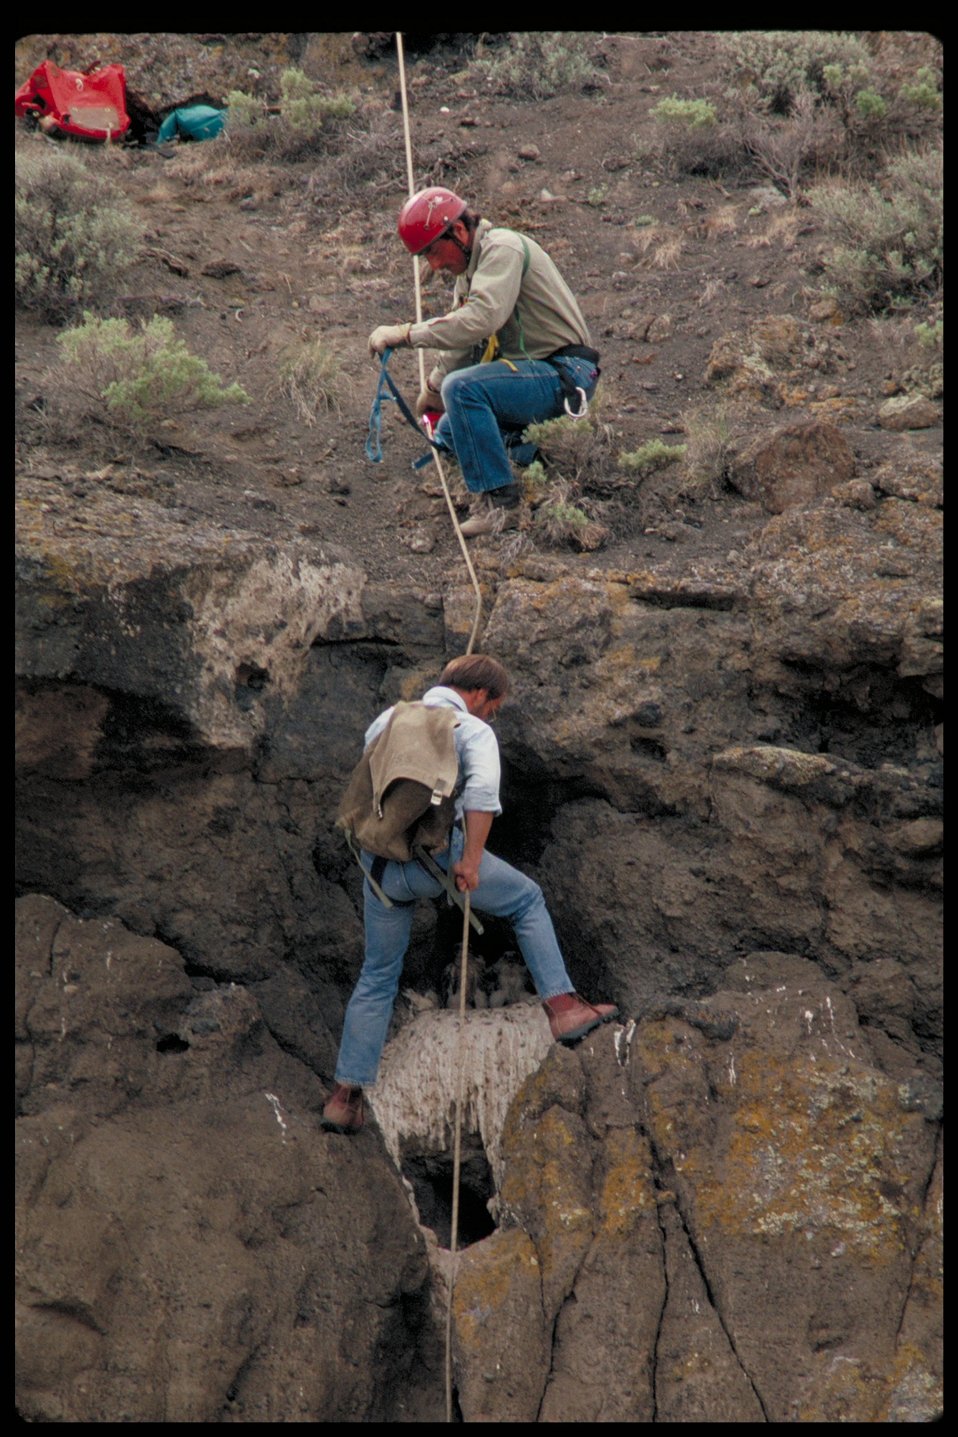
Birds of Prey Research Birds of Prey National Conservation Area BOP Owyhee Field Office LSRD Lower Snake River District